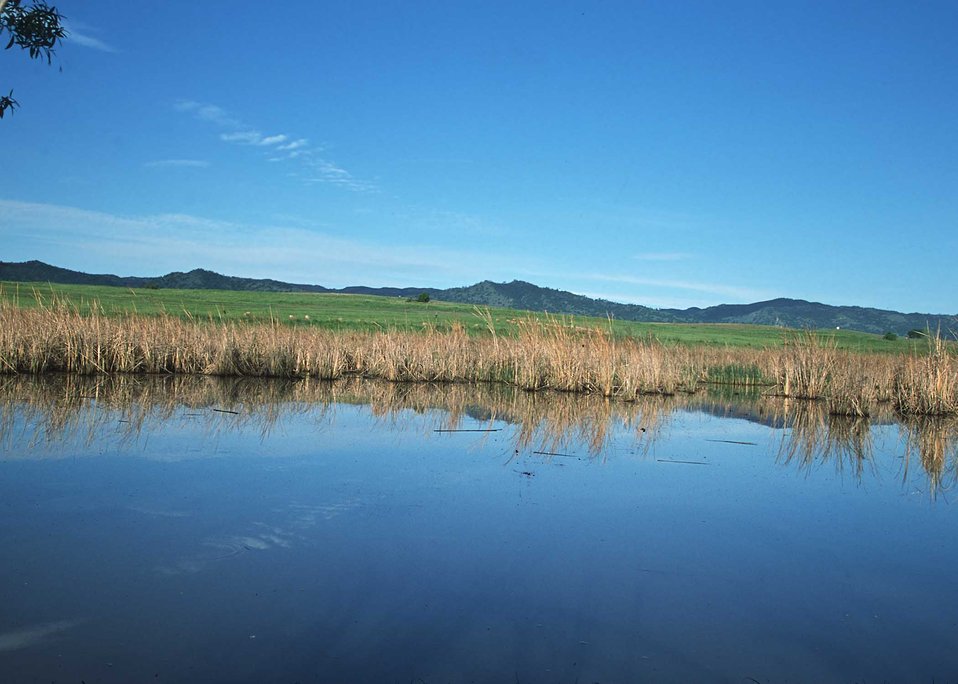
Restored wetland in Yolo County provide habitat and ecosystem diversity.